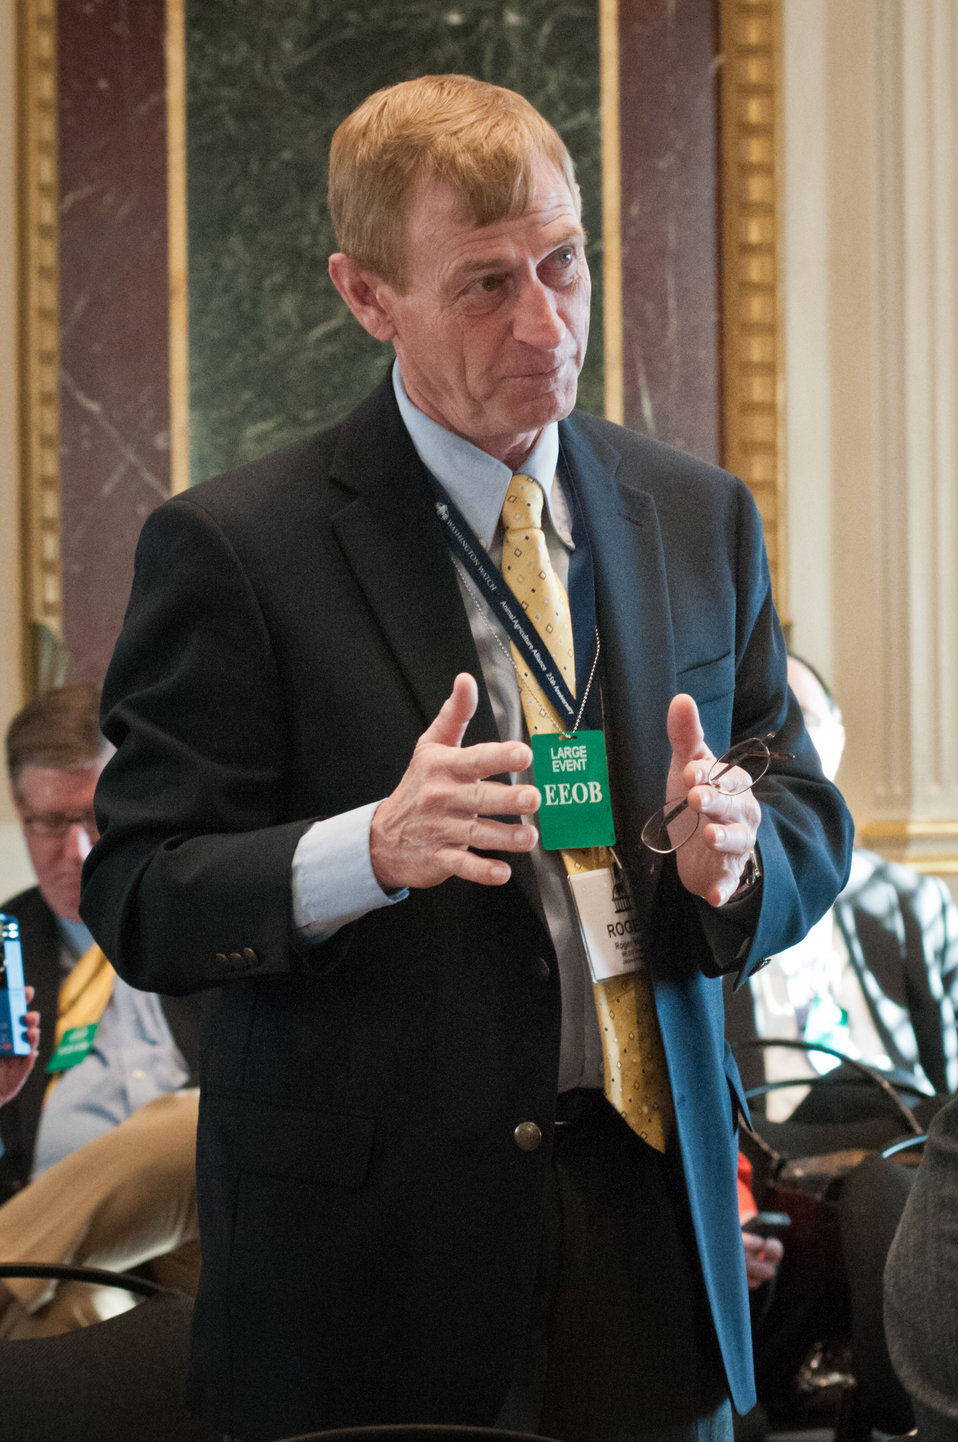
Roger Ward, WLDS Radio, Jacksonville, Illinois asks question to Agriculture Secretary Tom Vilsack, United States Department of Agriculture officials and Obama Administration officials at the spring National Association of Farm Broadcasting (NAFB), “Washington Watch” member retreat in Washington, D.C. This year the meeting was held in the Eisenhower Executive Office Building, Indian Treaty Room on Tuesday, April 24, 2012, featuring United Sates Department of Agriculture and Obama Administration officials. This opportunity provides an occasion to highlight efforts to rebuild and revitalize rural America, including efforts for the agricultural community. NAFB is the recognized and trusted source of agricultural and rural lifestyle information for America with approximately 200 members who broadcast via radio in nearly every state in the country.